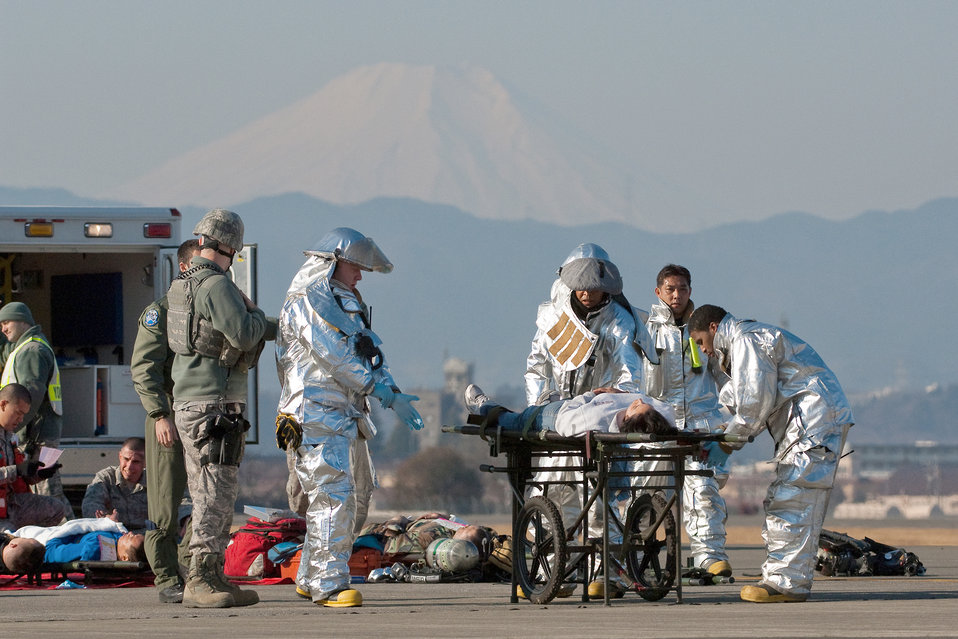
Emergency management exercise

Firefighters from the 374th Civil Engineer Squadron transport a patient to a casualty collection point following a simulated aircraft crash during an emergency management exercise Feb. 4, 2011, at Yokota Air Base, Japan.